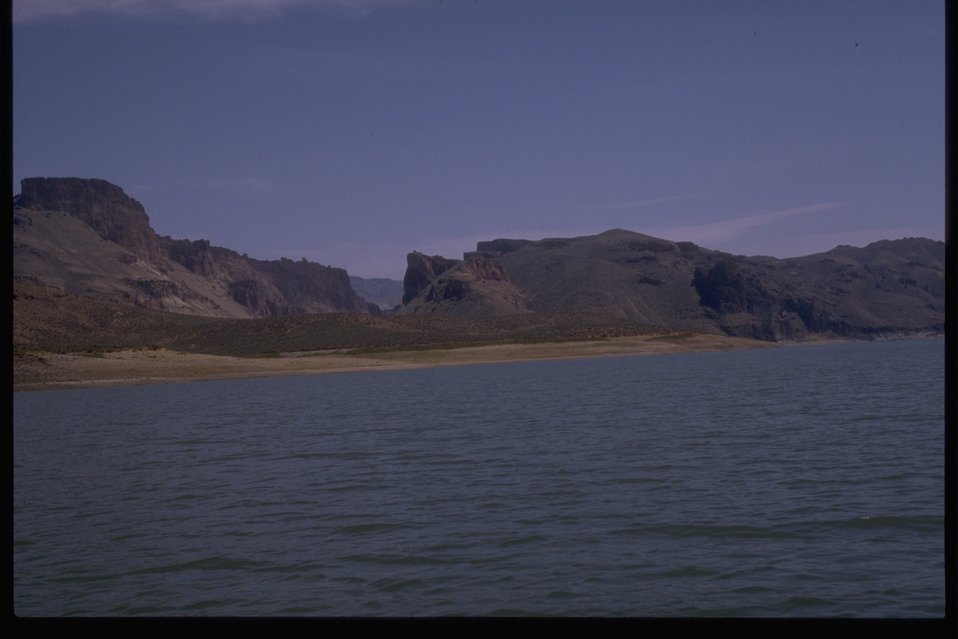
East shore of the Owyhee Reservoir.